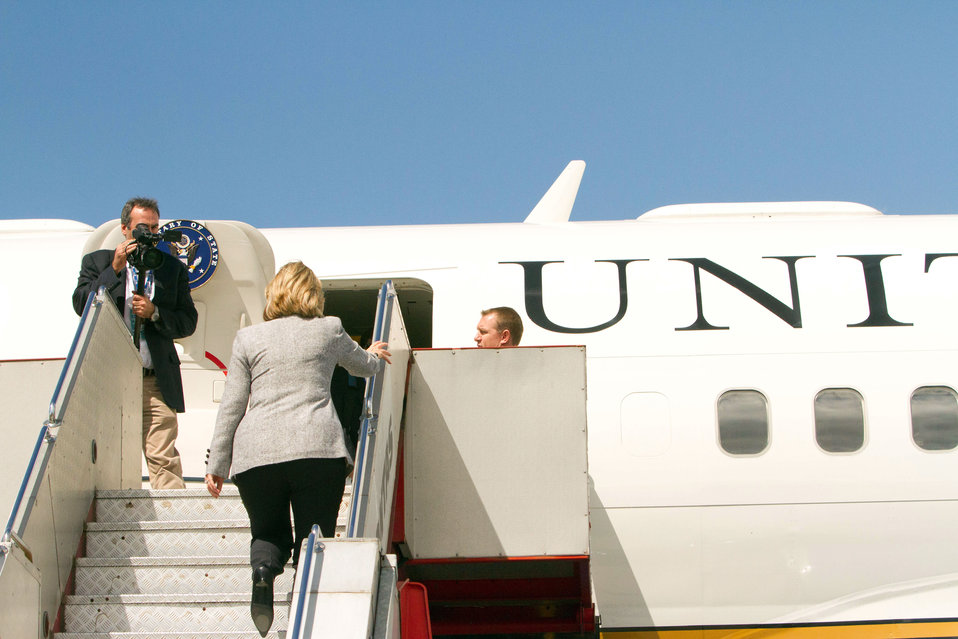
Secretary Clinton Boards the Plane To Depart Melbourne

U.S. Secretary of State Hillary Rodham Clinton boards the plane to depart Melbourne, Australia, on November 8, 2010.